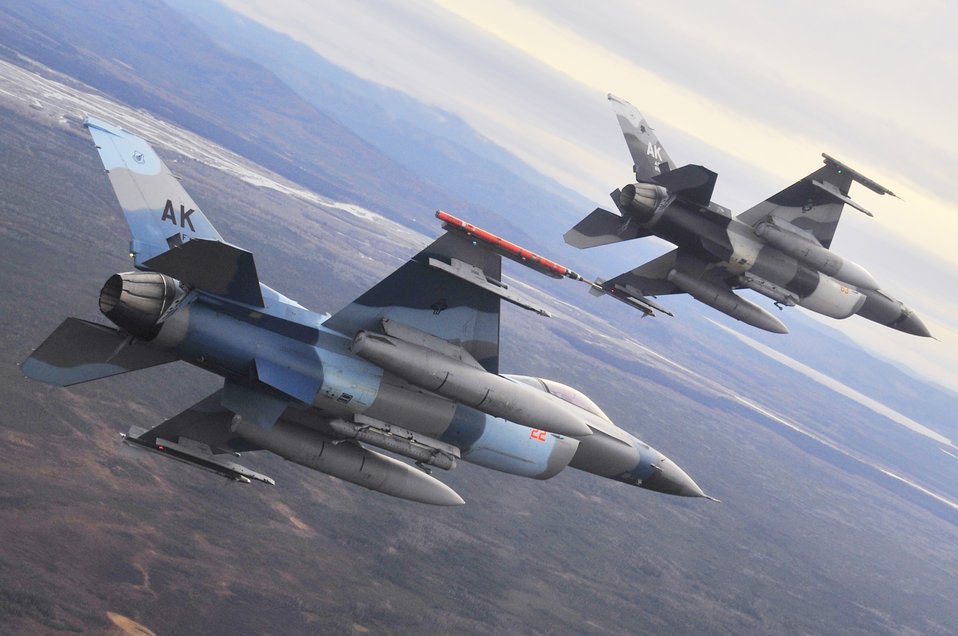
Looking for a 'fight'

F-16 Fighting Falcon